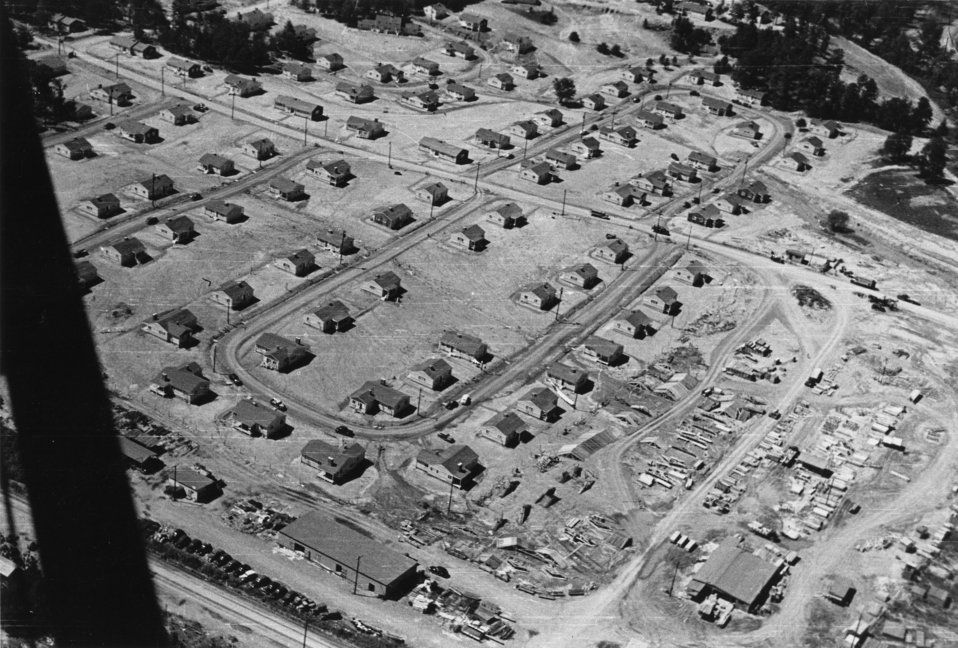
Aerial of Oak Ridge